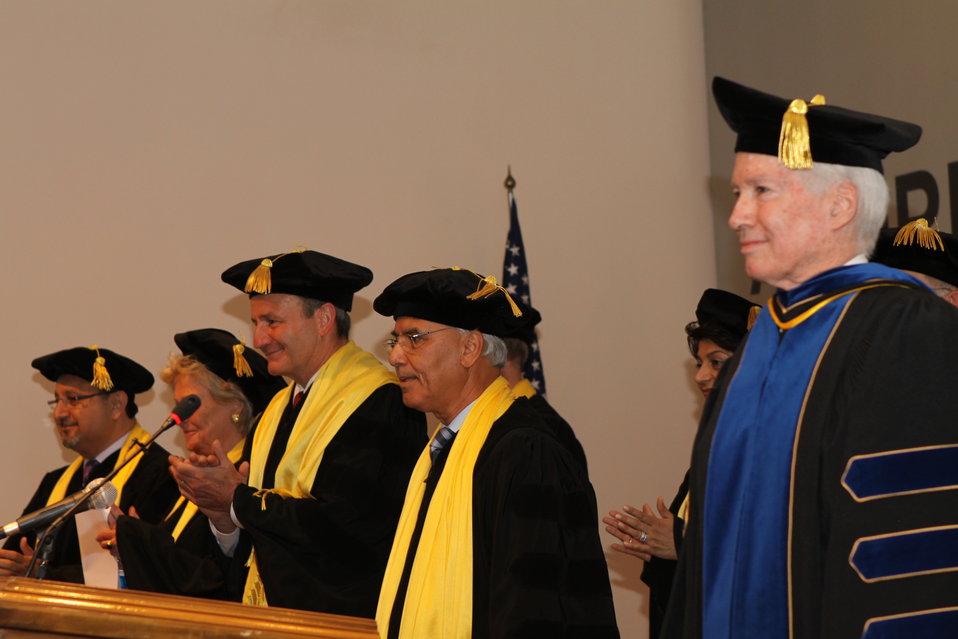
100526 AUAF Graduation 128